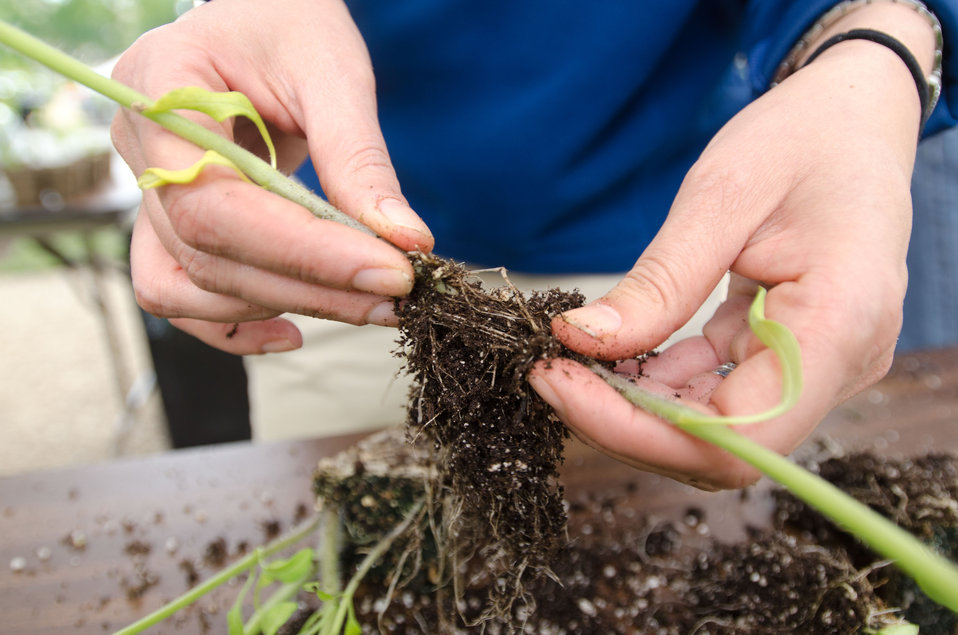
Tomato seedlings that were raised together are now separated and repotted for distribution by the People’s Garden Initiative and volunteer Executive Master Gardeners who distributed ‘Abraham Lincoln” Tomato seedlings to USDA employees in celebration of the 150th Anniversary of the U.S. Department of Agriculture, on Tuesday, May 15, 2012 in Washington, D.C. On this day, 150 years ago, President Abraham signed the Department into existence during the Civil War. In 1923 the H.W. Buckbee seed company of Rockford, Illinois introduced an heirloom variety named in honor of Illinois’ Greatest Son – Abraham Lincoln. The plant produces large beefsteak tomatoes in about 90 days. Volunteer Executive Master Gardeners planted and cultivated more that 3,000 seedlings ranging in size from one inch to more than a foot tall, so people could choose the best ones to transport home and to stagger the harvest by selecting a small and large seedling. One of the hopes of this event is to share the joys of gardening and harvesting, as well as the opportunity to share your harvest in your community. Seed packets are being distributed to People’s Gardens worldwide.